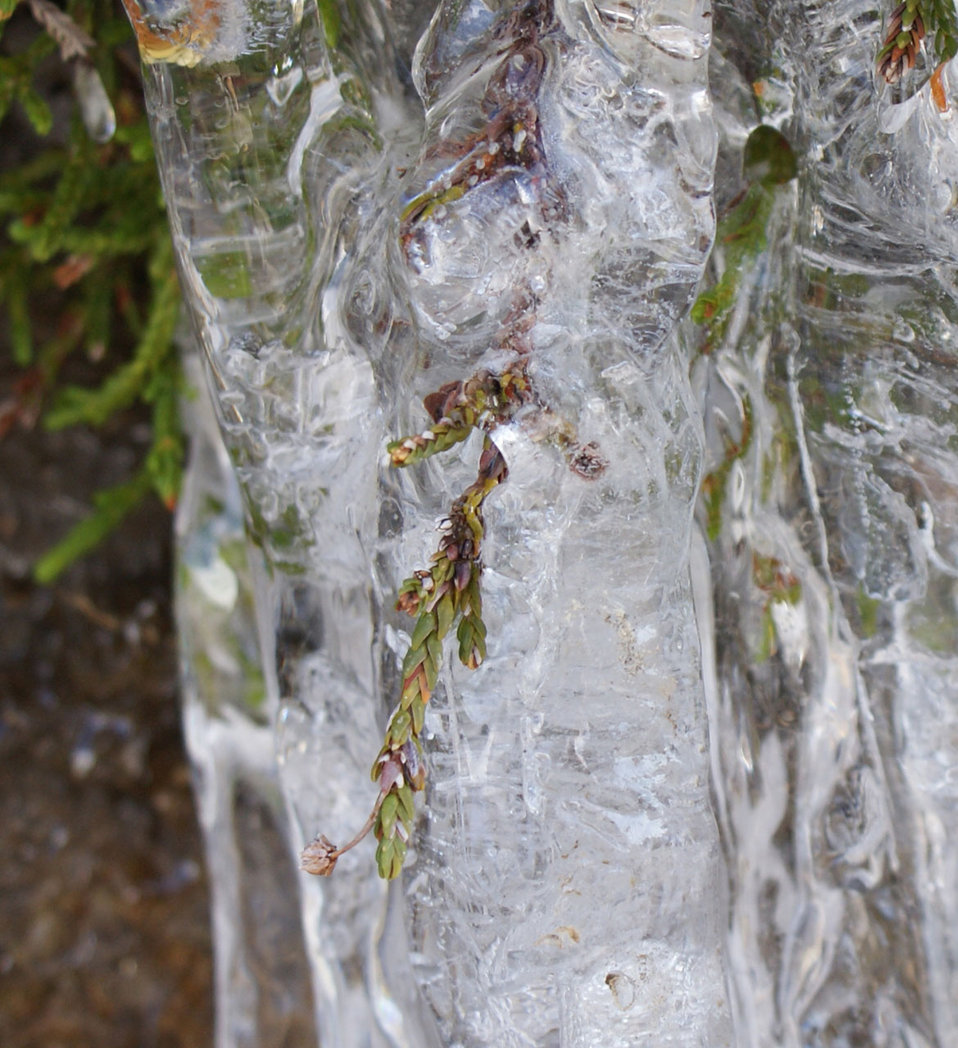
Trapped in the ice

Plant stuck in an icicle..